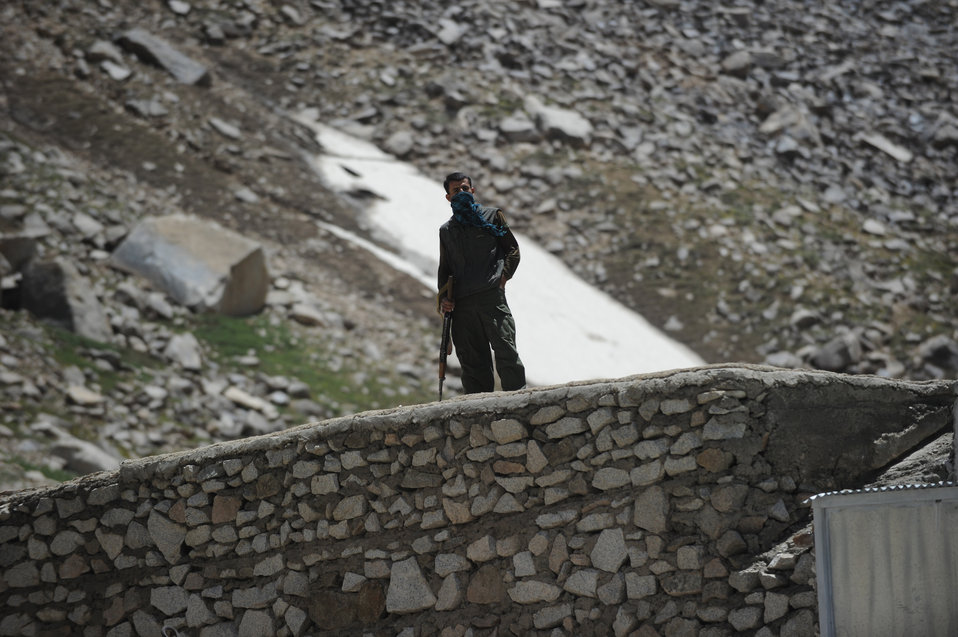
Security at the North entrance of the Salang Tunnel on the border of Parwan and Baghlan Provinces, Afghanistan, on Wednesday, June 15, 2011. (S.K.Vemmer/Department of State)